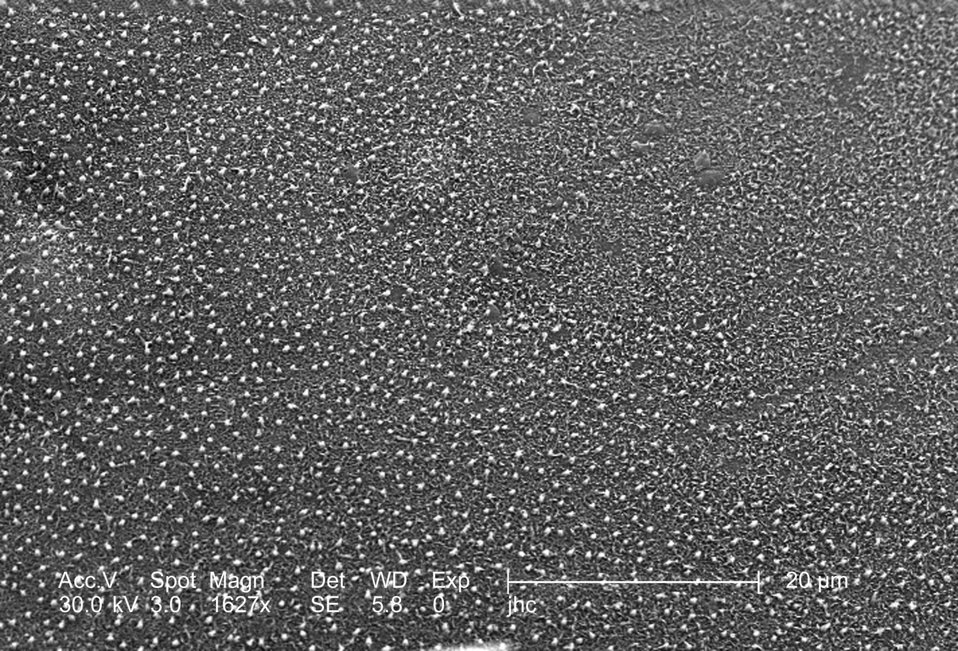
At a lower magnification of 1627x, of the same region as depicted in PHIL# 8937, this scanning electron micrograph (SEM) revealed the highly textured exoskeletal surface of an unidentified green bug, found deceased on the grounds in the suburbs of Decatur, Georgia, attached to a deceased, unidentified caterpillar. The exoskeleton on insects is commonly adorned by a myriad of protuberances, some of which are to allow its owner to attract a mate, others to detect changes in its environment, and still others to act as protective mechanisms by which the organism can thwart a foe, or avoid being eaten by a predator.